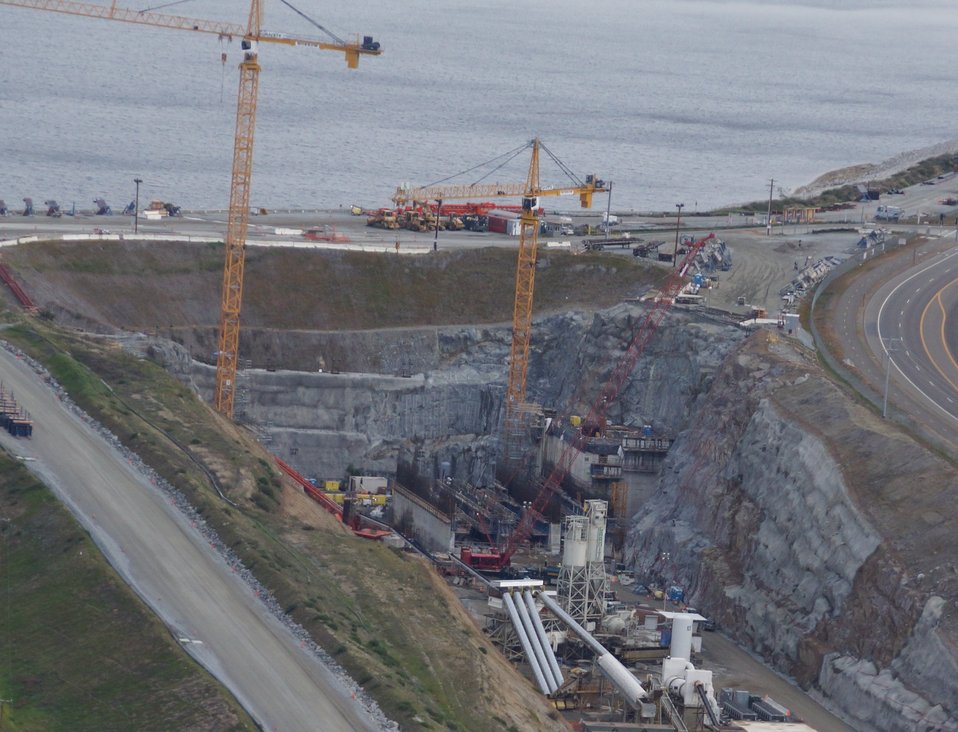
Aerial View of Folsom Dam Auxiliary Spillway

An aerial view shows the entire construction site of the Folsom Dam auxiliary spillway March 6, 2013. Excavation began in 2011 to remove 3.5 million cubic yards of rock and soil from the site. In 2012, the first steel and concrete were placed for the control structure—essentially a second dam—that will stand as tall as the Statue of Liberty when completed. The completed dam and chute will include 350,000 cubic yards of concrete, enough to line up concrete trucks from Sacramento to Los Angeles, and 24 million tons of steel, enough to build two Eiffel Towers. The project is estimated to be completed by October 2017 and is one piece of a larger plan to help the Sacramento region reduce the risk of flooding to a one-in-200 chance for flooding in any given year.